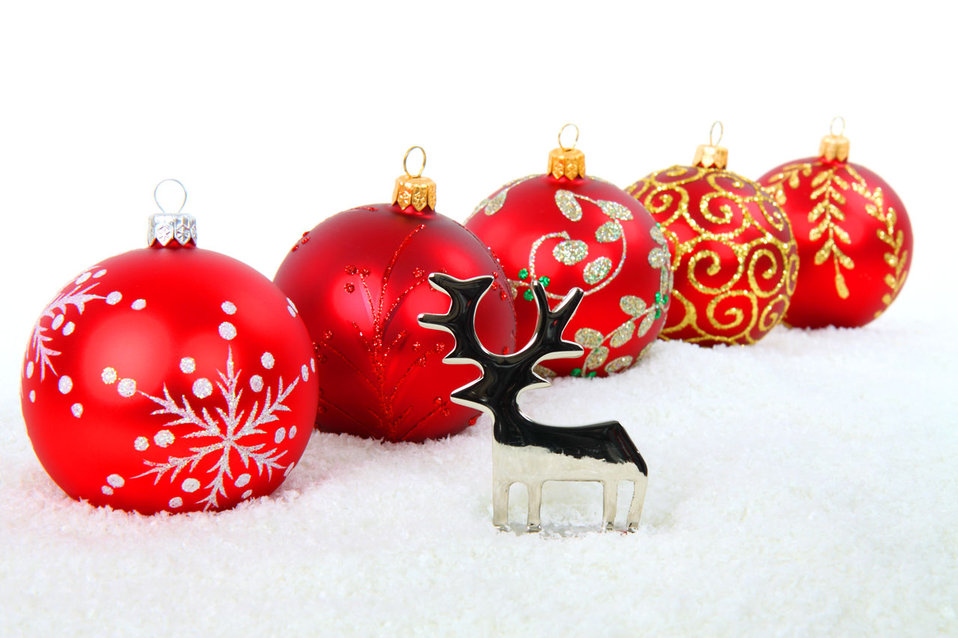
Reindeer and christmas balls

Reindeer and red christmas baubles in snow.